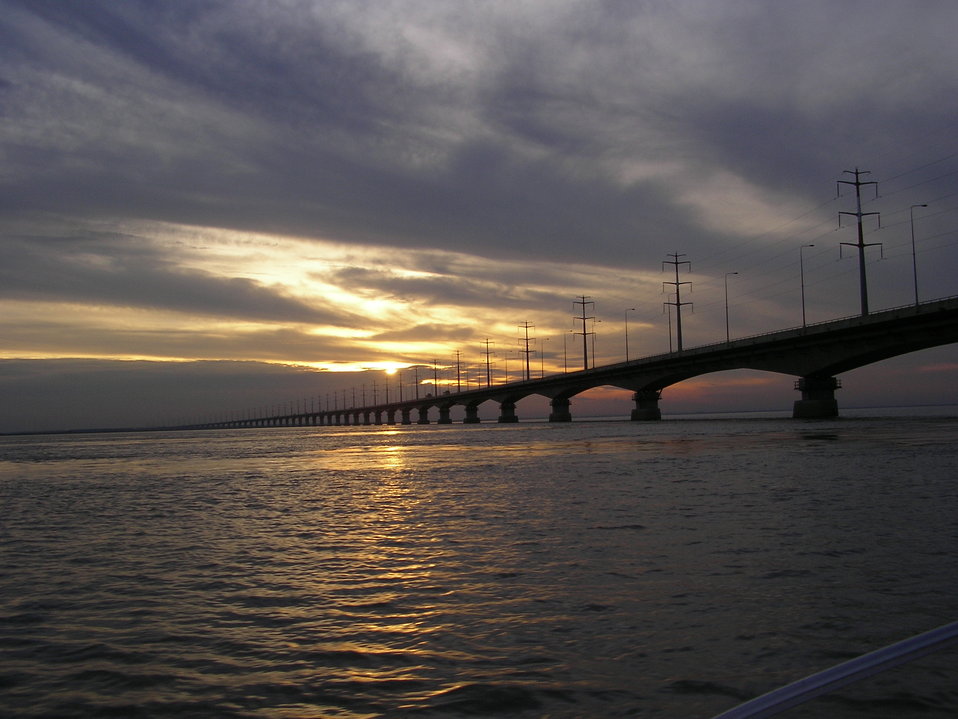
Arman Aziz, the creator of this file, donated it to public domain on August 29, 2006